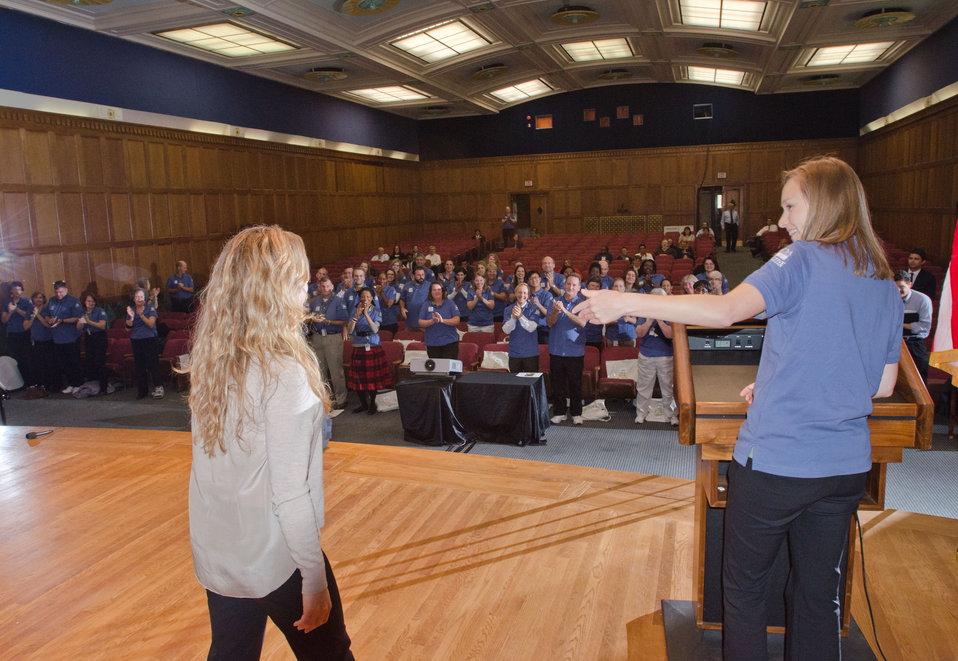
Graduation day of the 2011 U.S. Department of Agriculture (USDA) Executive Master Gardeners, on Tuesday, November 8, 2011 in Washington, DC. During the past six-weeks, students contributed 40-hours of volunteer time, completed studies and testing to receive their certificates today as an Executive Master Gardener. Many of the sessions occurred before work hours, during lunchtime or at community garden project sites such as Powell Middle School. USDA challenges its employees to establish People's Gardens at USDA facilities worldwide or in community gardens. People's Gardens vary in size and type, but all have a common purpose - to help the community and the environment. To learn about the People’s Garden Initiative visit www.usda.gov/wps/portal/usda/usdahome?contentid=peoples g....